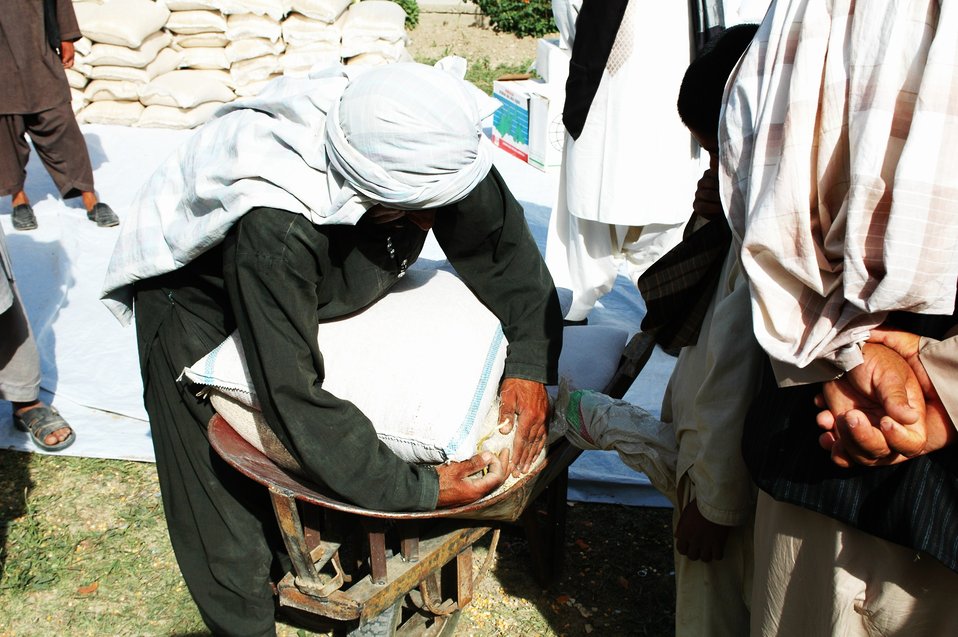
Dr Shah Visits Argandab April 10, 2010